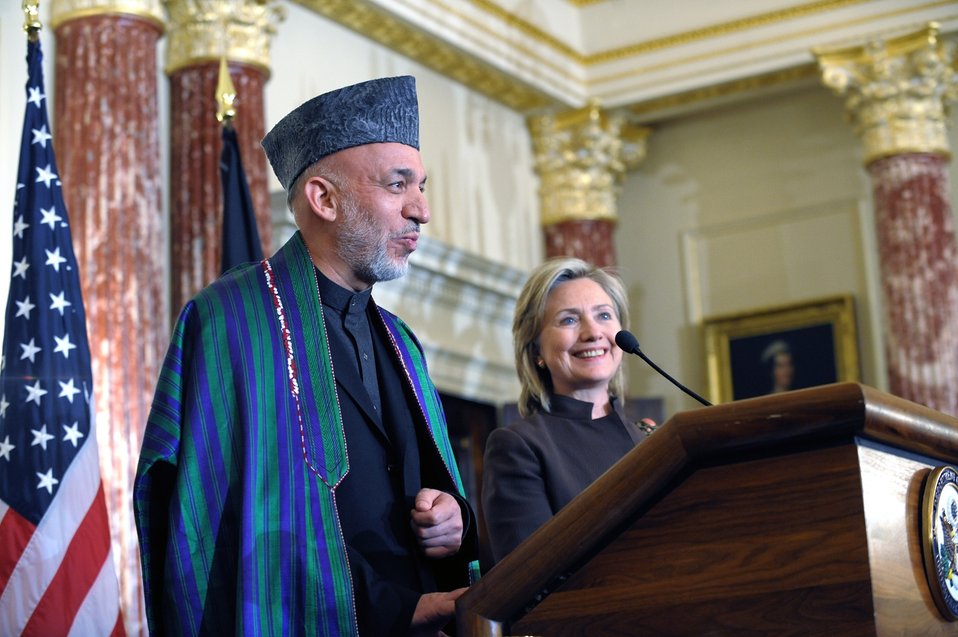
Afghan President Karzai Delivers Remarks With Secretary Clinton

President of the Islamic Republic of Afghanistan Hamid Karzai delivers remarks beside U.S. Secretary of State Hillary Rodham Clinton at the reception in the Ben Franklin Room at the U.S. Department of State, Washington, D.C., May 11, 2010.